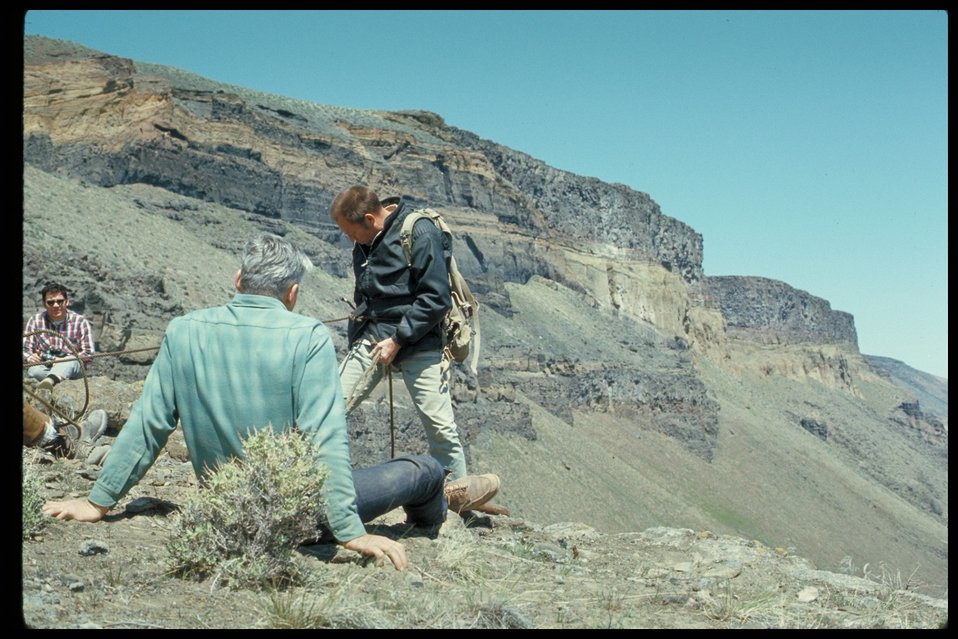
Roping down to Eagle nest after mother has left Swan Falls Birds of Prey National Conservation Area BOP Owyhee Field Office LSRD Lower Snake River District